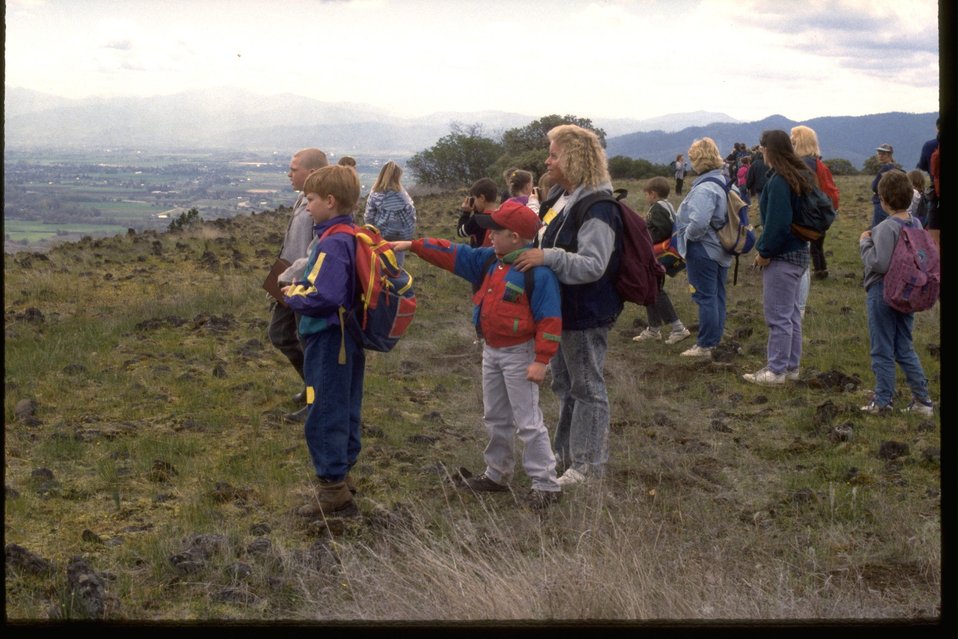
Children and parents receive an environmental education lesson at the Table Rocks.